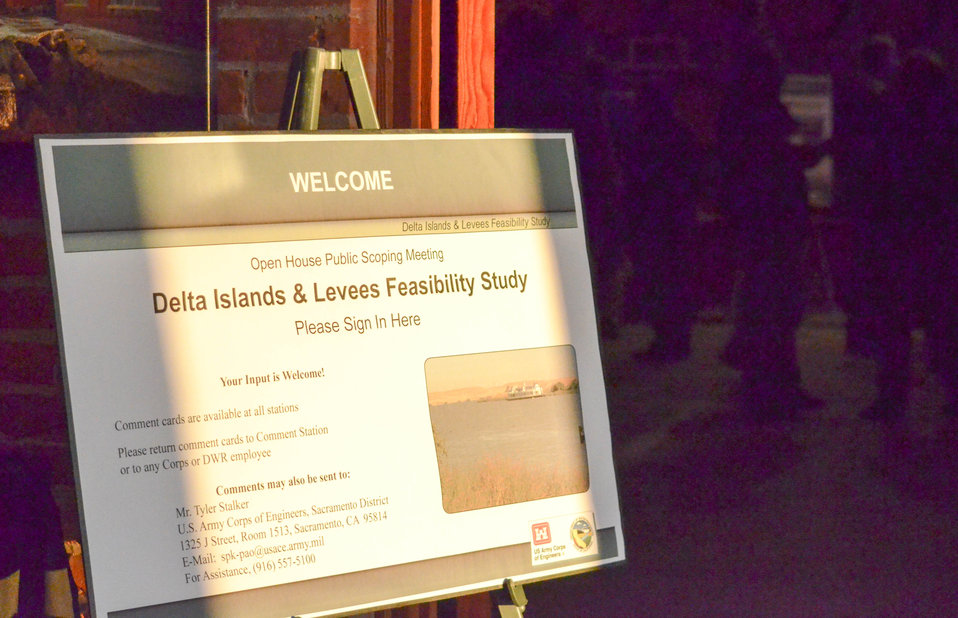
Corps discusses Delta study at public scoping meetings

The sun shines on a ‘welcome’ sign greeting visitors to the U.S. Army Corps of Engineers Sacramento District’s public scoping meetings for the Delta Islands and Levees Feasibility Study Feb. 19, 2013, at the Old Sugar Mill in Clarksburg, Calif. An additional meeting was held Feb. 20 in Sacramento. The public scoping meetings are the first step in the planning process for the study, which will determine potential Corps participation in flood risk management and ecosystem restoration projects in the Sacramento-San Joaquin Delta.